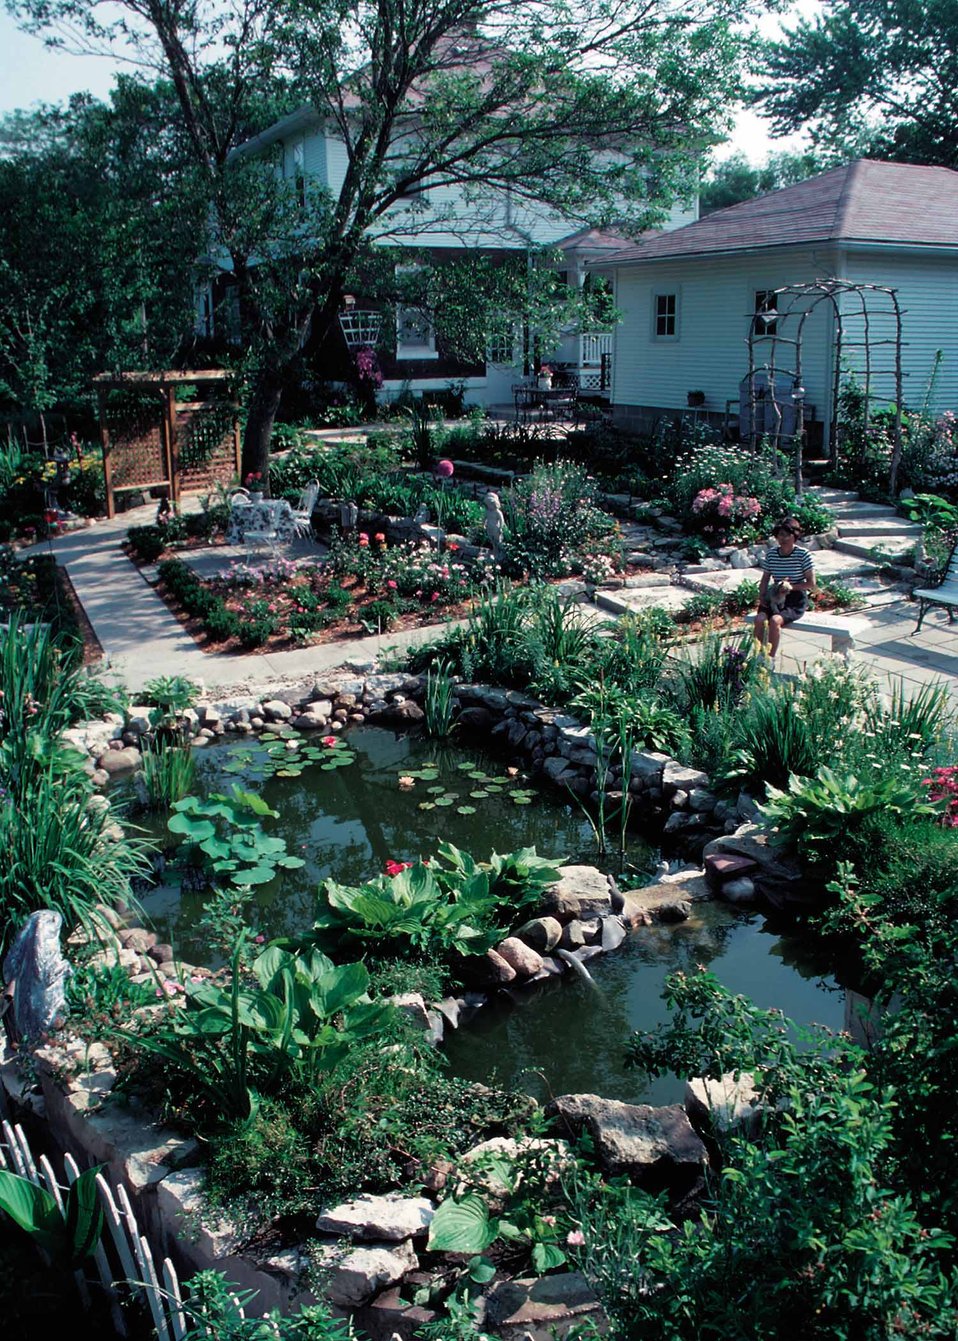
A pond is the focal point of a backyard conservation scene in a backyard in Cantril, Iowa, a small town in Van Buren County in southeastern Iowa.